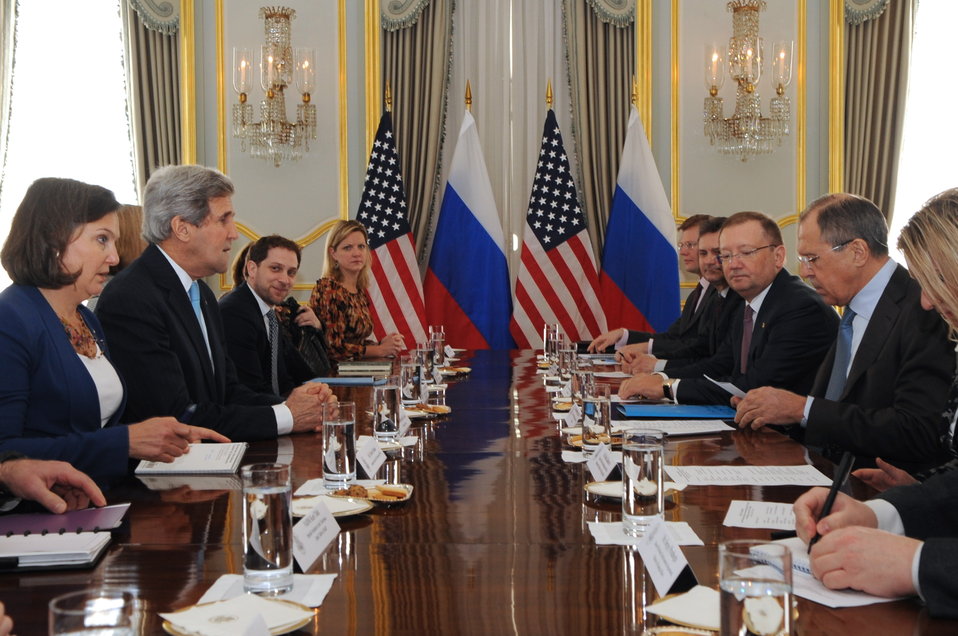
Secretary Kerry Holds Bilateral Meeting With Russian Foreign Minister Lavrov

U.S. Secretary of State John Kerry, Russian Foreign Minister Sergey Lavrov, and their respective teams sit down for a bilateral discussion focused on deescalating tensions in Ukraine in London, United Kingdom, on March 14, 2014.